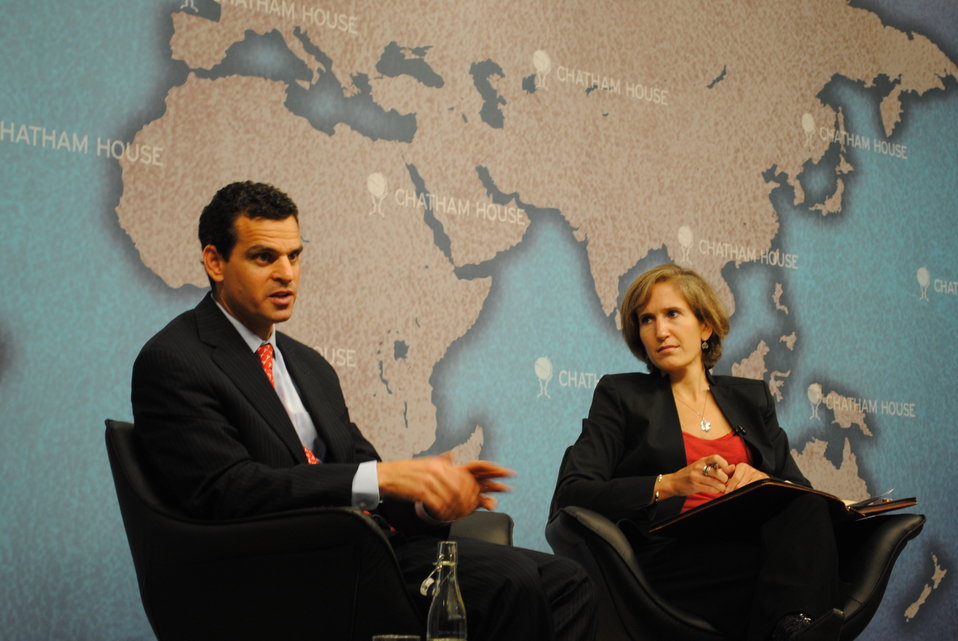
Under Secretary for Terrorism and Financial Intelligence David Cohen at Chatham House in London, U.K. speaking about growing threat of kidnapping for ransom